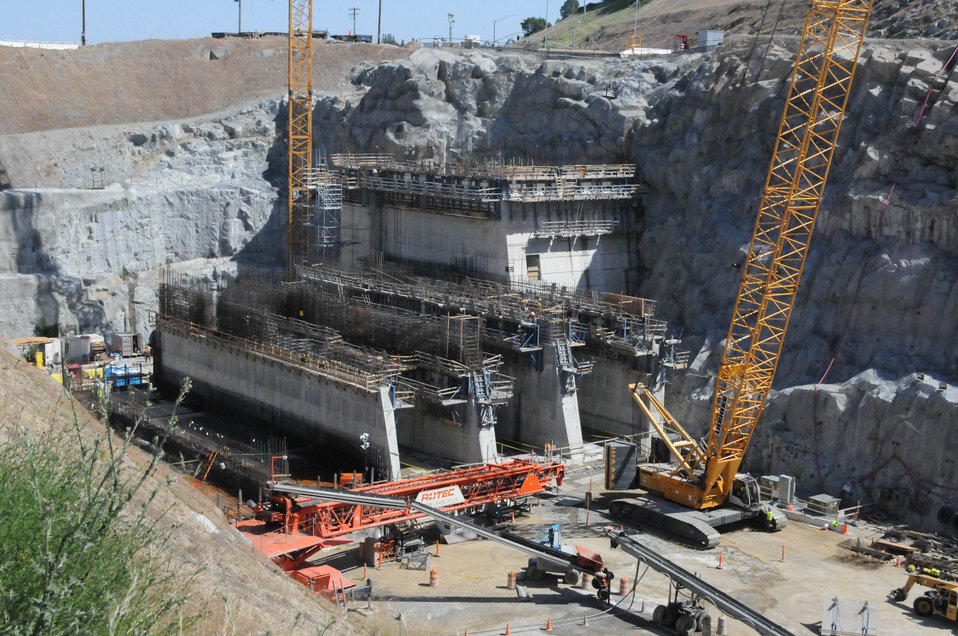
Folsom’s ‘second dam’ beginning to take shape

Six openings or bays that will guide water through the control structure of Folsom Dam’s new auxiliary spillway continue to take shape April 24, 2013, in Folsom, Calif. The control structure, essentially a second dam, will work with the main dam to release water from the reservoir during large storms. (U.S. Army photo by Capt. Michael N. Meyer/Released) Watch the video: bit.ly/1emfhkb